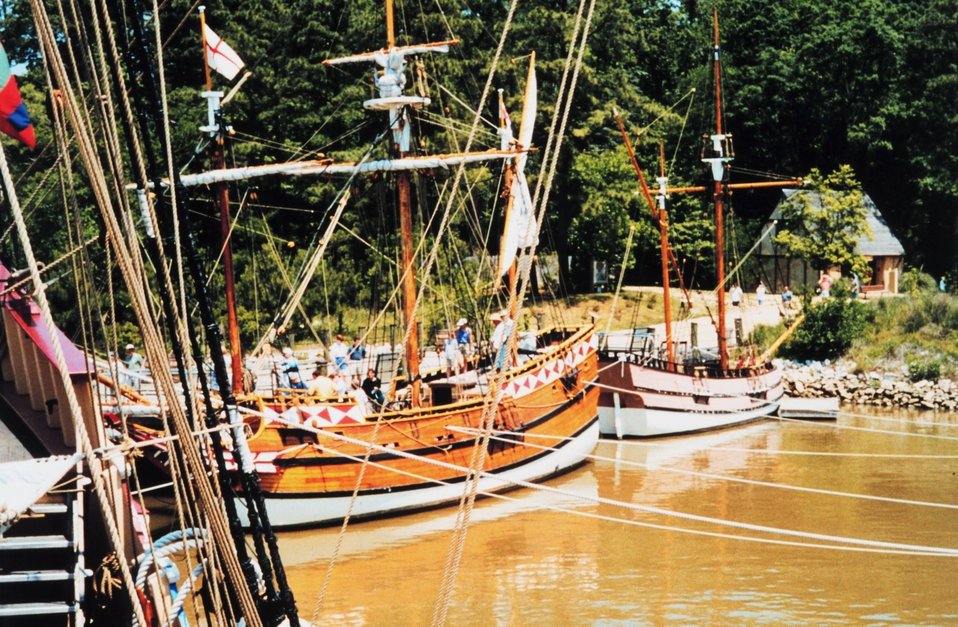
Reproduction of early English vessels at Jamestown, Virginia.